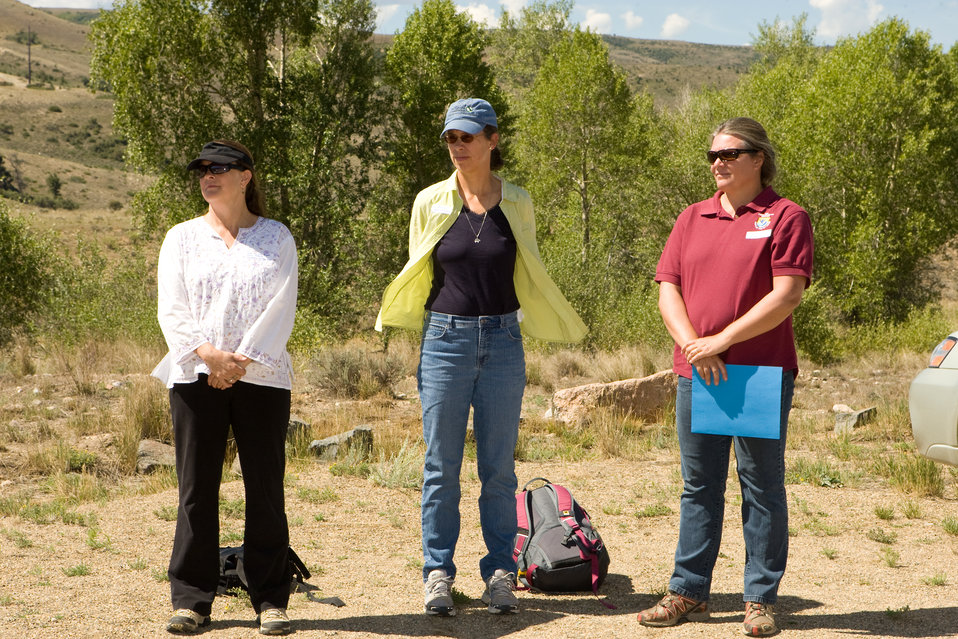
Colorado Rare Plant Conservation Initiative

The Colorado Rare Plant Conservation Initiative (RPCI) is a partnership of 23 statewide and regional agencies, private organizations, and academic institutions working to conserve 121 rare plants in Colorado. As part of these efforts the group developed the Colorado Rare Plant Conservation Strategy, developed Best Management Practices to reduce energy development impacts, addressed climate change, and developed focused strategies for the conservation of individual species at eight priority landscapes. The group has also worked to coordinate volunteer efforts for plant conservation across the state.